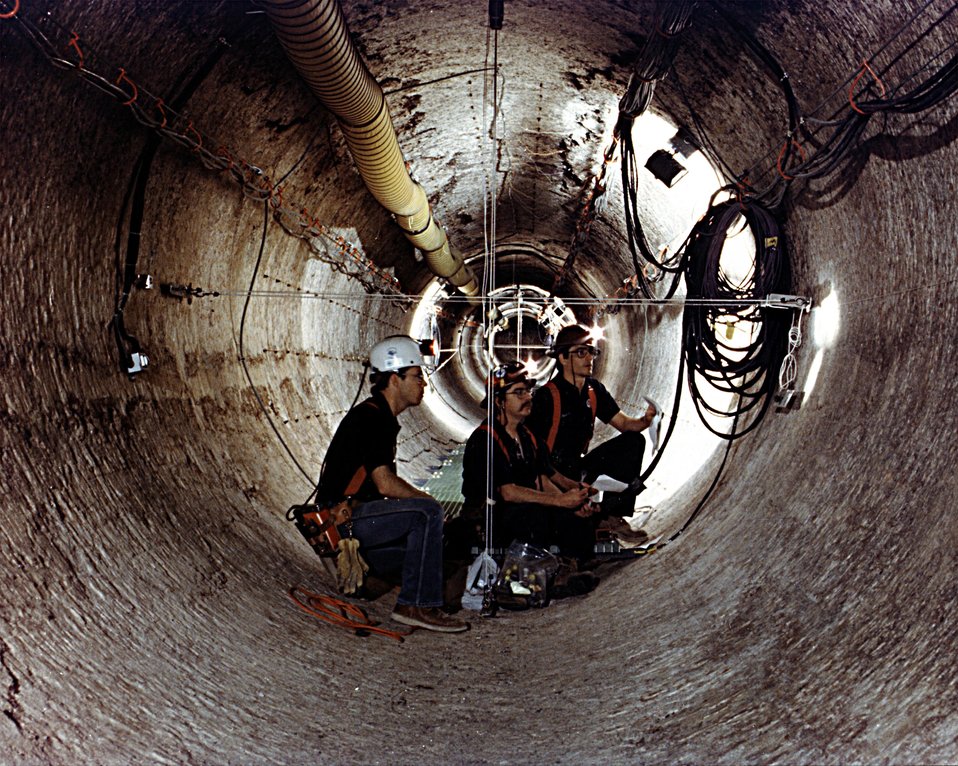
WIPP EXPERIMENTAL OPERATIONS PERSONNEL INSPECTING CONVERGENCE GAUGES IN EXPERIMENTAL ROOM Q.

EXPERIMENTAL ROOM Q PRIMARILY MONITORS BRINE FLOW THROUGH CLAY SEAMS THAT ARE PRESENT IN THE GEOLOGY. THE WASTE ISOLATION PILOT PLANT, LOCATED IN SOUTHEASTERN NEW MEXICO, IS A DOE RESEARCH AND DEVELOPMENT FACILITY DESIGNED TO DEMONSTRATE THE SAFE DISPOSAL OF DEFENSE RADIOACTIVE WASTE IN ANCIENT SALT BEDS.